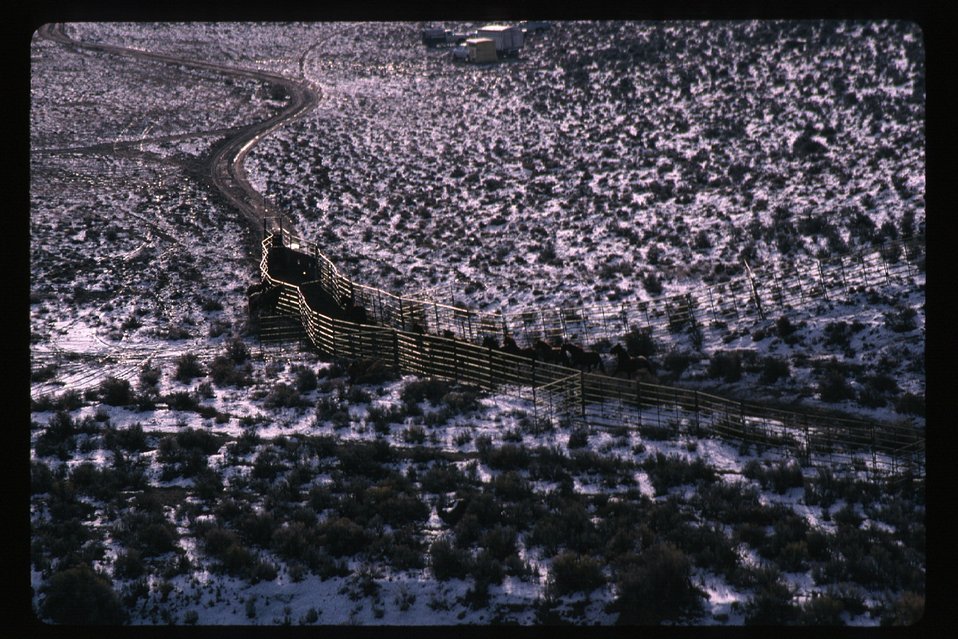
Wild Horse and Burro Adoption Program Gathering Corral Four Rivers Field Office LSRD Lower Snake River District